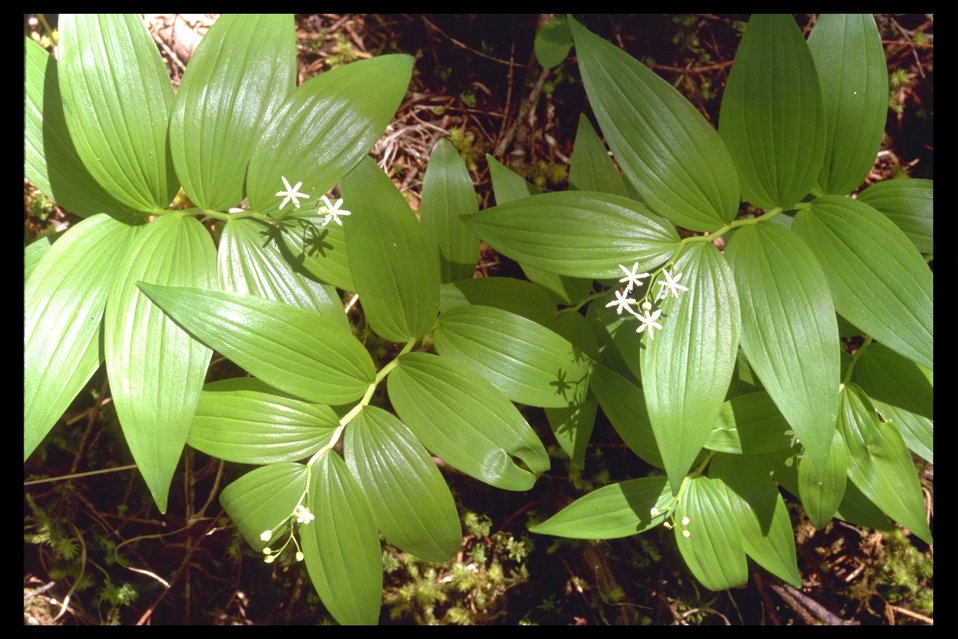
Star-Flowered Solomon's Seal (Smilacina stellata) along the West Fork Trail Creek.